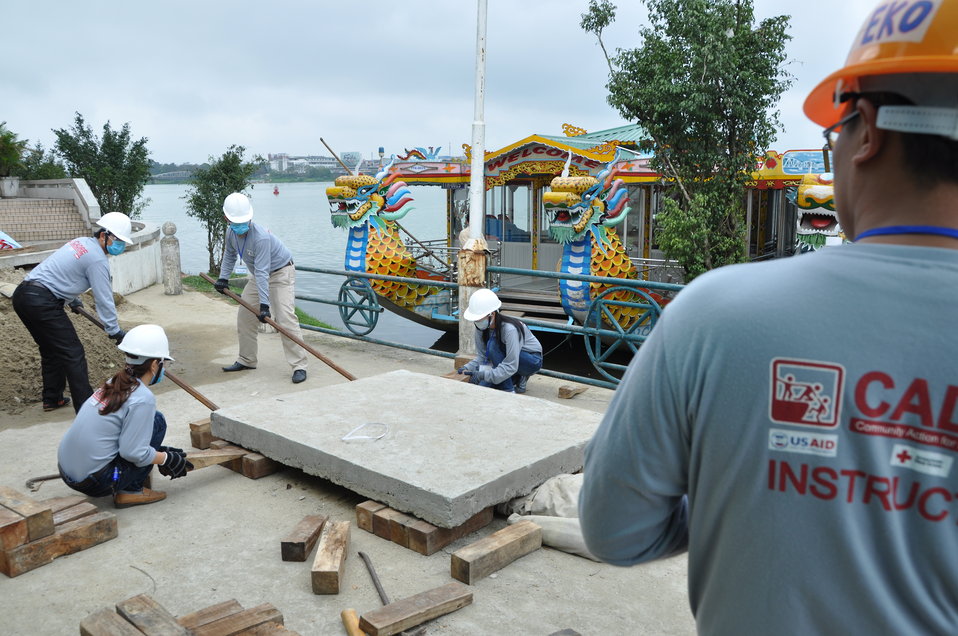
Disaster and Emergency Training Funded by USAID in Hue, Vietnam